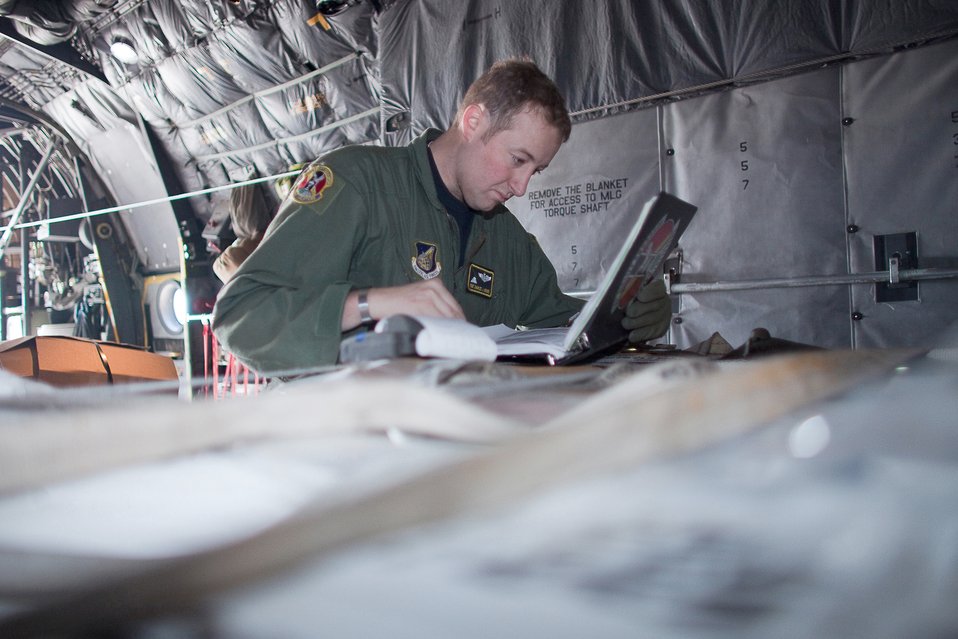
Airmen deliver boron

Staff Sgt. Charles Kirchen inspects a pallet of boron aboard a C-130 Hercules March 19, 2011, at Yokota Air Base, Japan. Sergeant Kirchen is assigned to the 36th Airlift Squadron.